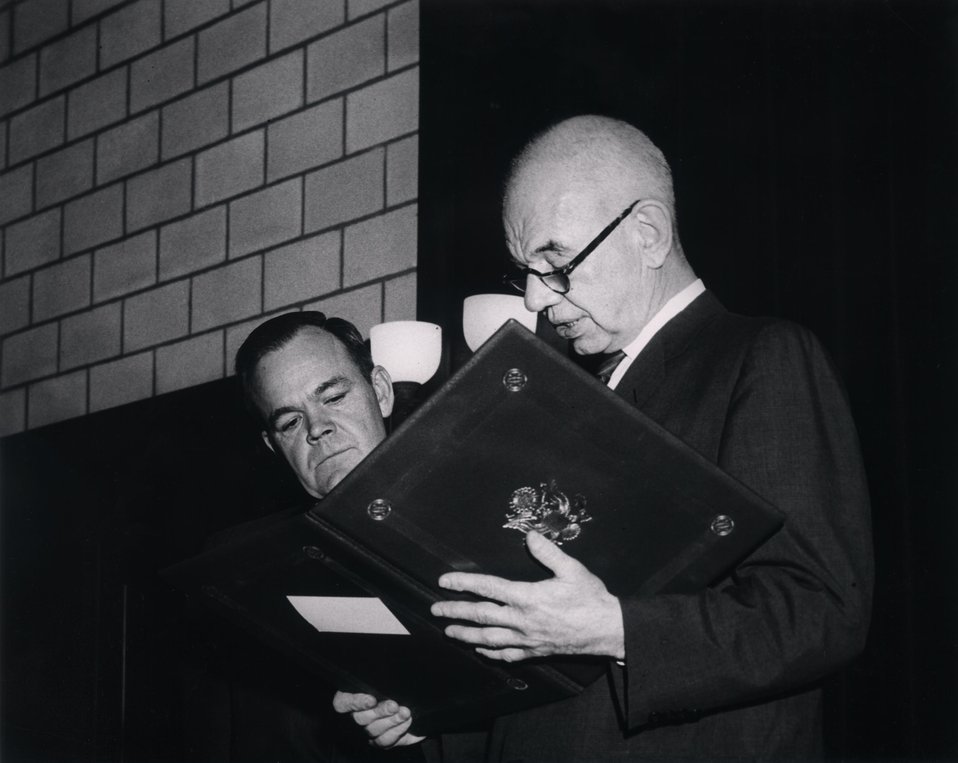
Dr. Haworth, Dr. Kouts. ERNEST O. LAWRENCE AWARD - 1963. National Academy of Sciences, April 25, 1963.